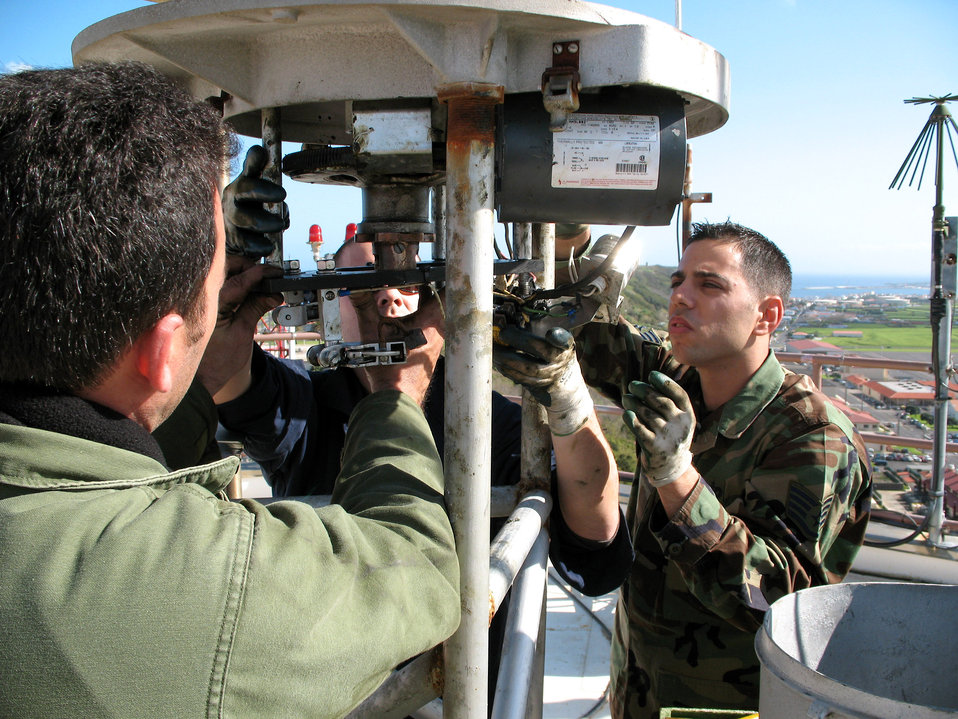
Lajes civil engineers fix beacon on air traffic control tower

Staff Sgt. Shawn Slaiman and two Portuguese electricians fix the beacon atop the air traffic control tower at Lajes Field, Portugal. The beacon is vital for pilots landing at Lajes. Sergeant Slaiman is an electrical journeyman with the 65th Civil Engineer Squadron.